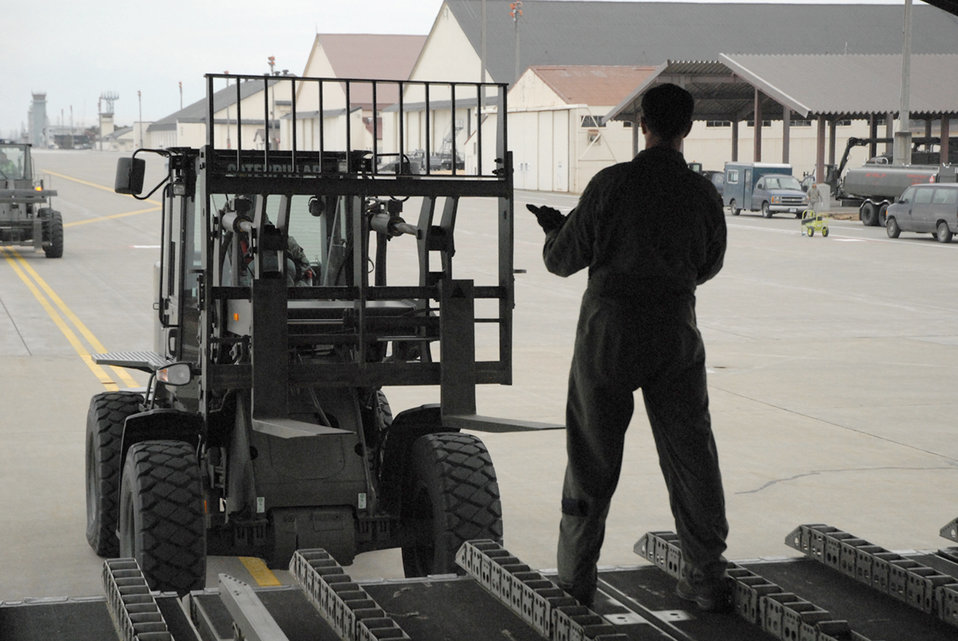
517th Airlift Squardron supports relief efforts in Japan

Joint Base Elmendorf-Richardson, Alaska -- Air Force Master Sgt. Stephen Mallory, loadmaster, stationed at the 517th Airlift Squadron, Joint Base Elmendorf Richardson Alaska, marshals 10KAT forklifts to offload 47,000 lbs of water for humanitarian relief efforts off a C-17 at Misawa Air Base Japan.